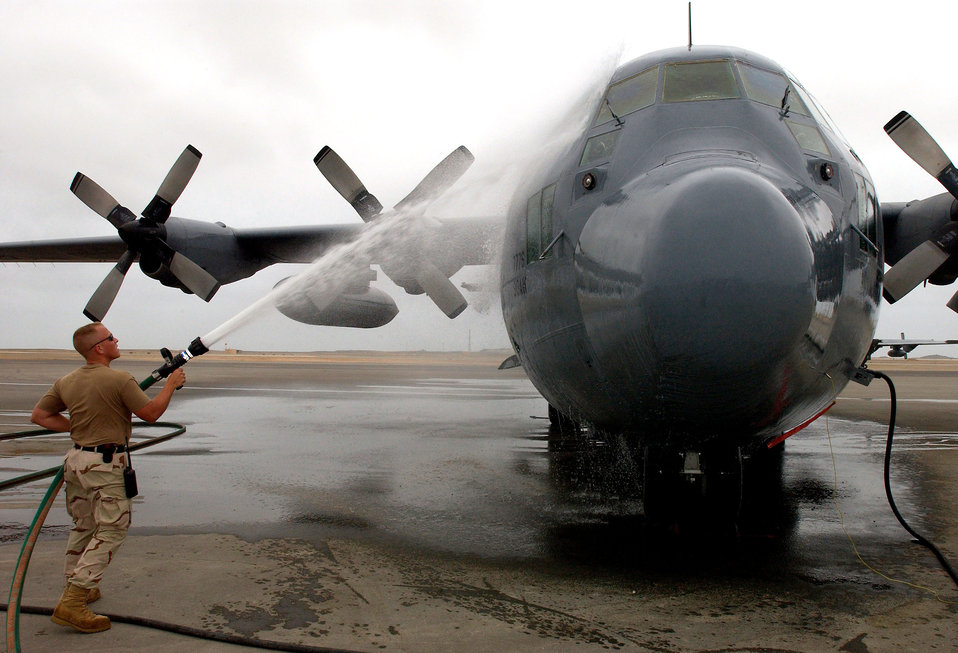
Scrub-a-dub-dub

OPERATION IRAQI FREEDOM -- Senior Airman Lewis Ensor rinses a C-130 Hercules with fresh water at a forward-deployed location Aug. 15. Fresh water rinses off the effects of flying over salt water, preventing aircraft corrosion. Ensor is assigned to the 321st Expeditionary Civil Engineer Squadron supporting Operation Iraqi Freedom.